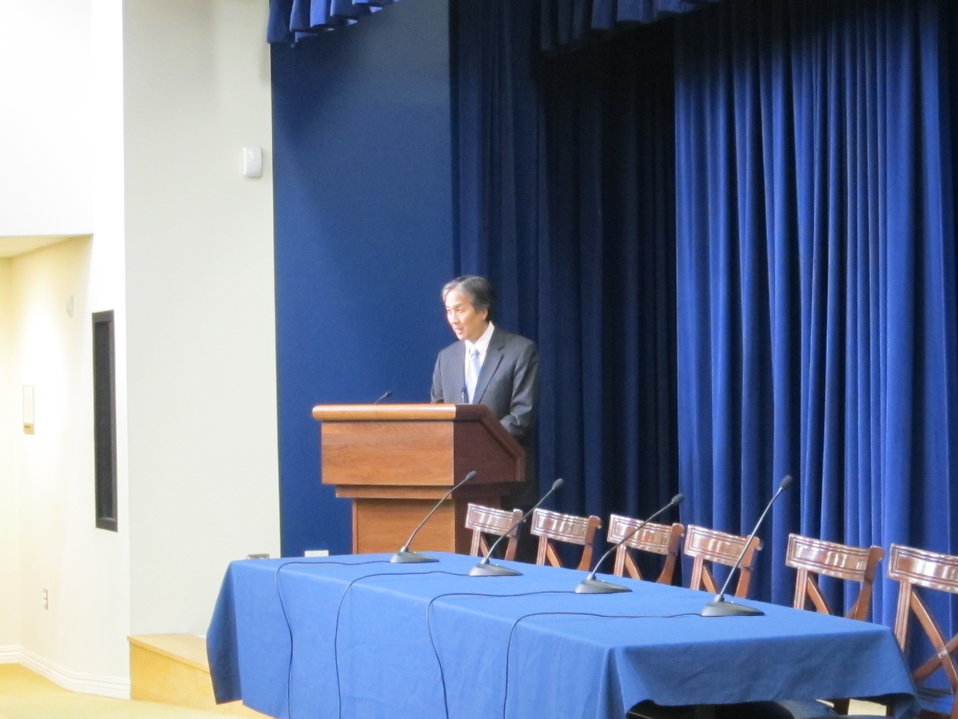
WH 2012 World Hepatitis Day Event